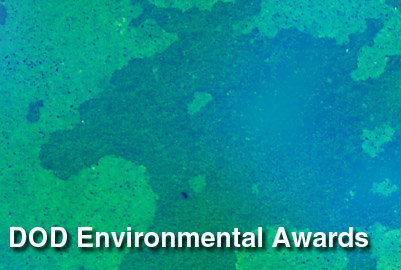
DOD Environmental Awards

The winners of the 2010 Secretary of Defense Environmental Awards were announced April 14. The Air Force had four of the nine awards.